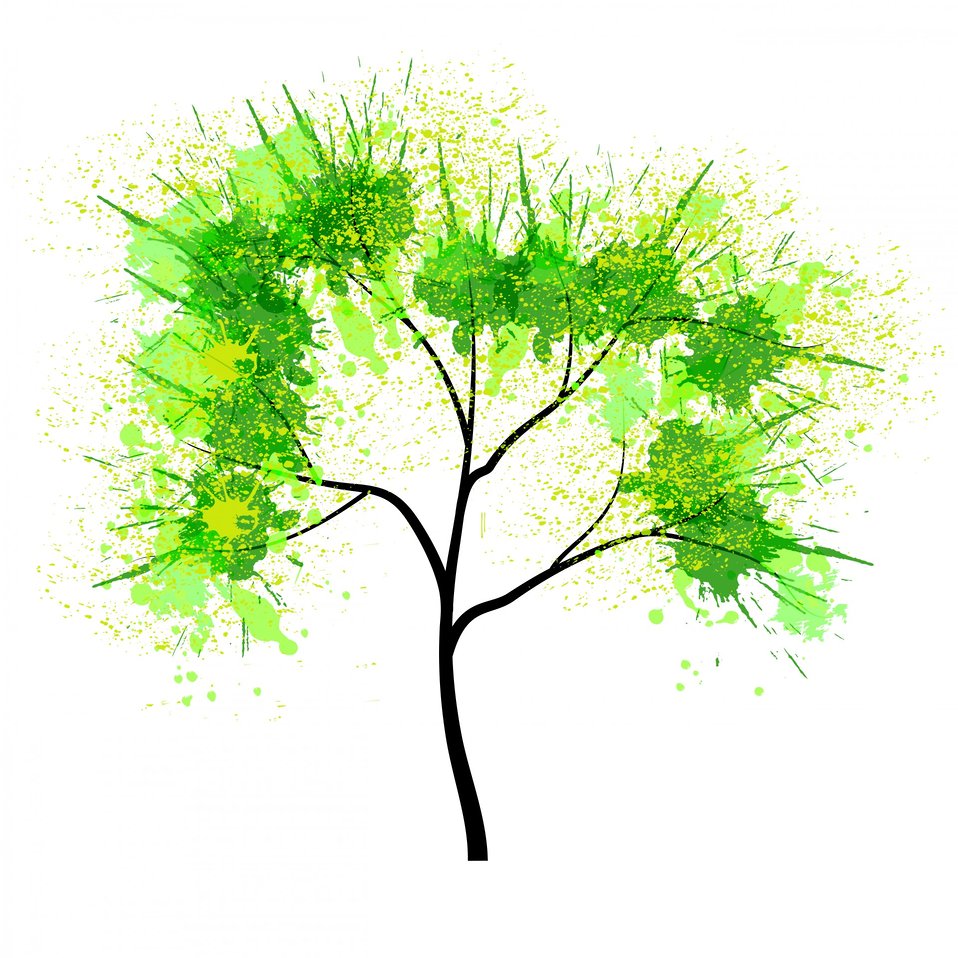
Tree. vector illustration.